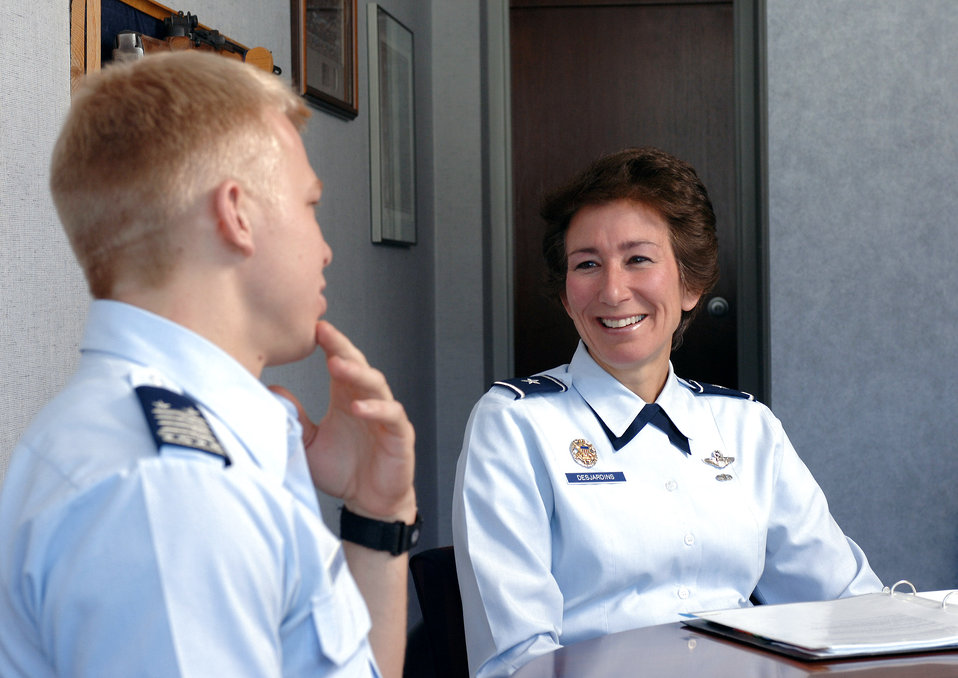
Academy Commandant to take on new challenge

Brig. Gen. Susan Y. Desjardins mentors a cadet July 25 at the Air Force Academy in Colo. General Desjardins has been serving as the commandant of cadets, but will depart the Academy in October to become the Headquarters Air Mobility Command Strategic Plans, Requirements and Programs deputy director at Scott Air Force Base, Ill.